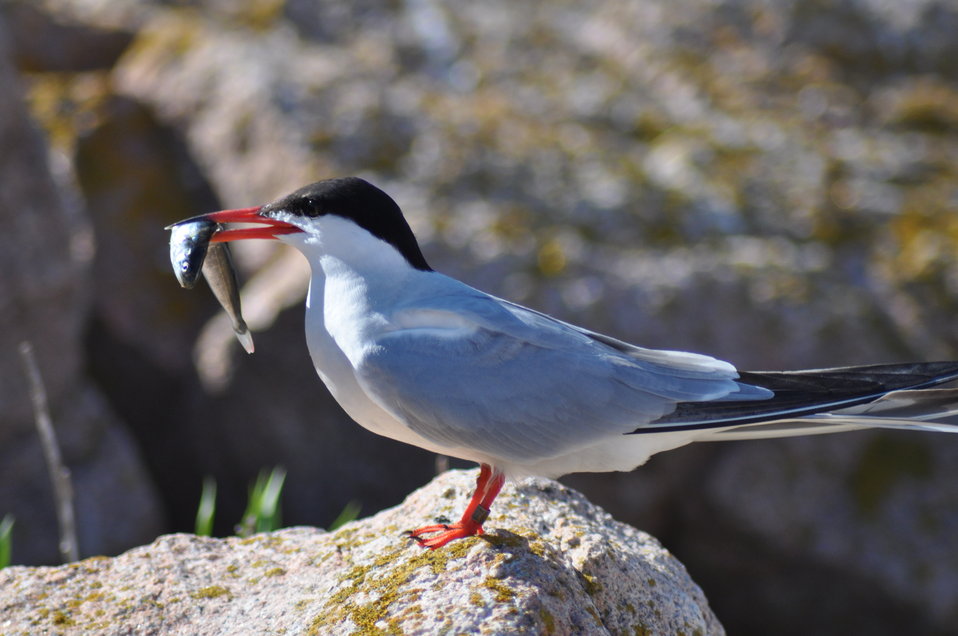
Common Tern with Fish in Beak

Petit Manan Island, Maine Coastal Islands NWR. Summer with the Seabirds blog: mainecoastalislands.wordpress.com/2010/08/01/terns/